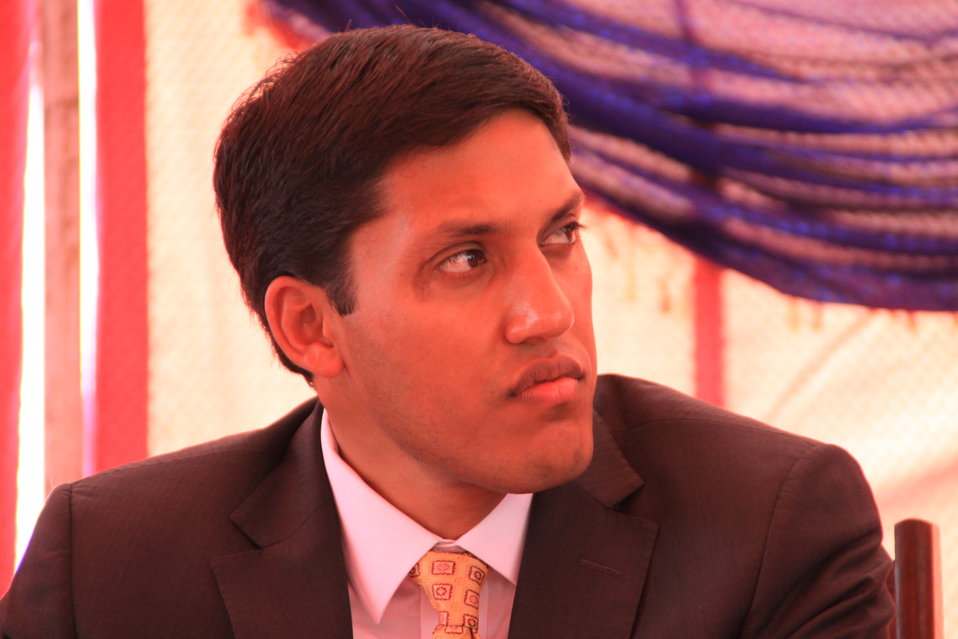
Baddam Bagh Farm